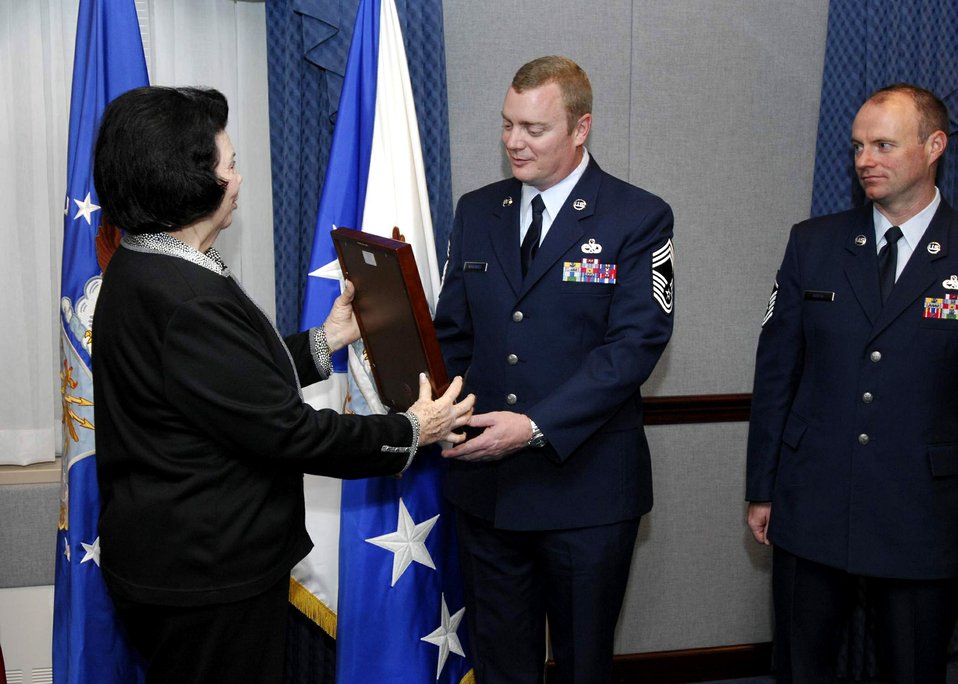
PACAF receives Air Force maintenance award

Carol Creech gives the Gen. Wilbur L. Creech Maintenance Excellence Award to Chief Master Sgt. Robert L. Norcross II and Master Sgt. Jeffrey Soots during a ceremony Jan. 16 at the Pentagon. Chief Norcross and Sergeant Soots accepted the award on behalf of the 10,000-plus maintainers and logisticians in Pacific Air Forces command. Mrs. Creech is the wife of the general, who passed away in 2003.